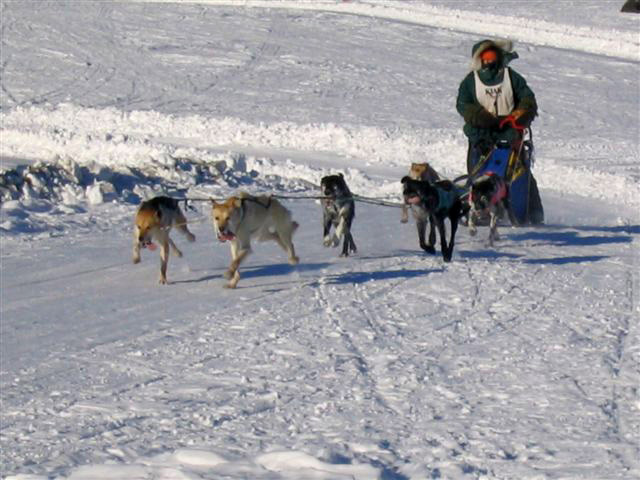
Eielson Airmen help keep mushers, dogs in race

A musher and his dog sled team race past a checkpoint Feb. 24 during the Yukon Quest. The Yukon Quest is a 1,000-mile international sled dog race held annually in Alaska. Mushers race through territory from Whitehorse to Fairbanks. Airmen from Eielson helped man the final check-point, North Pole Dog Drop.